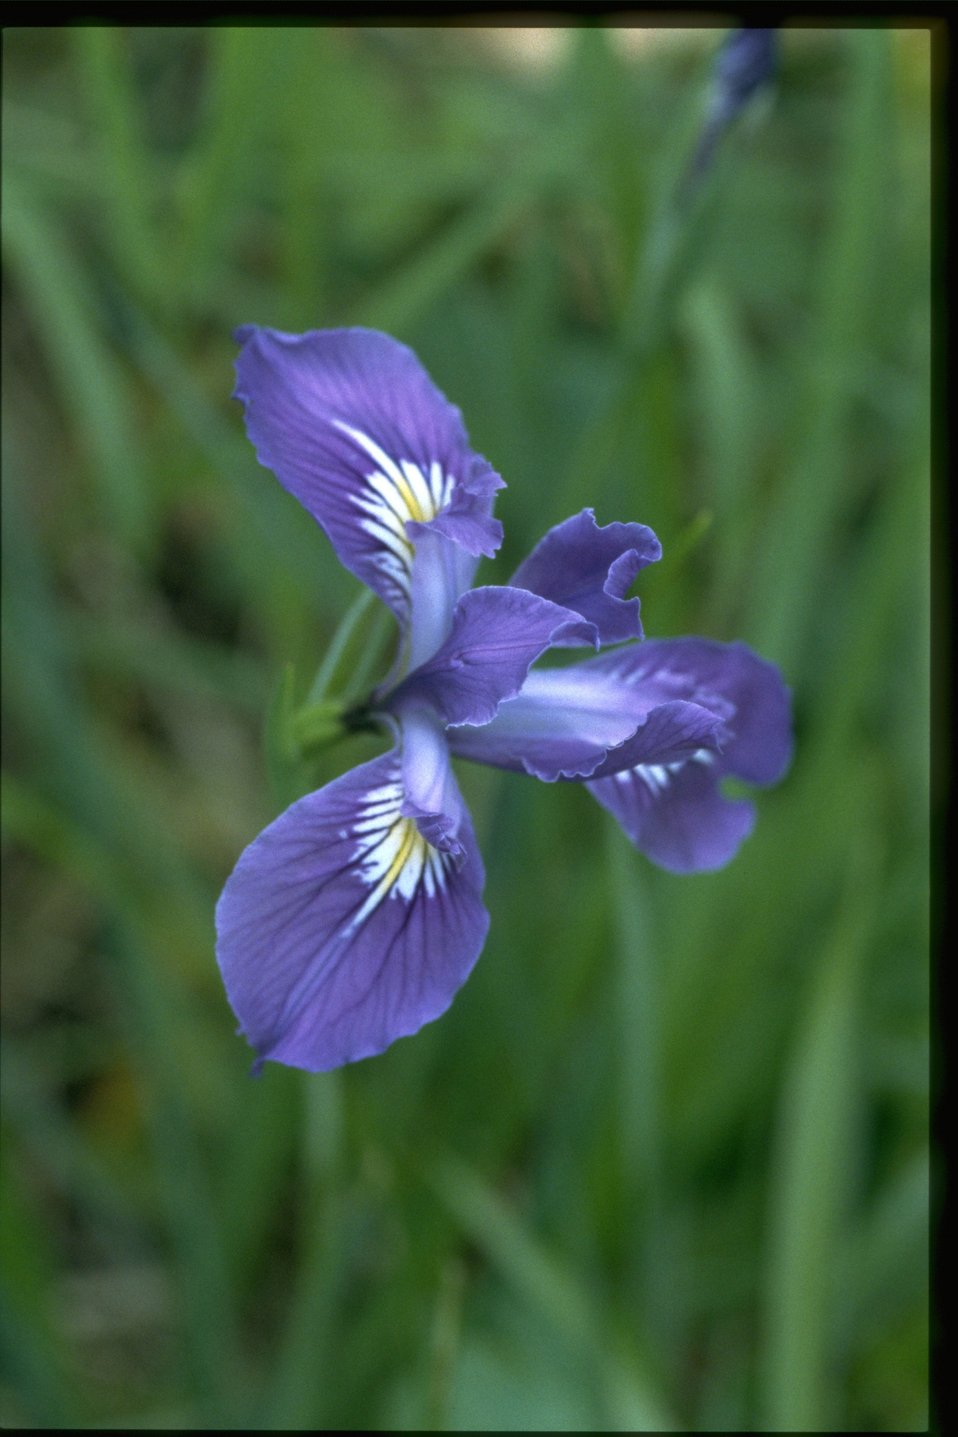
Medium shot of Iris tenax.